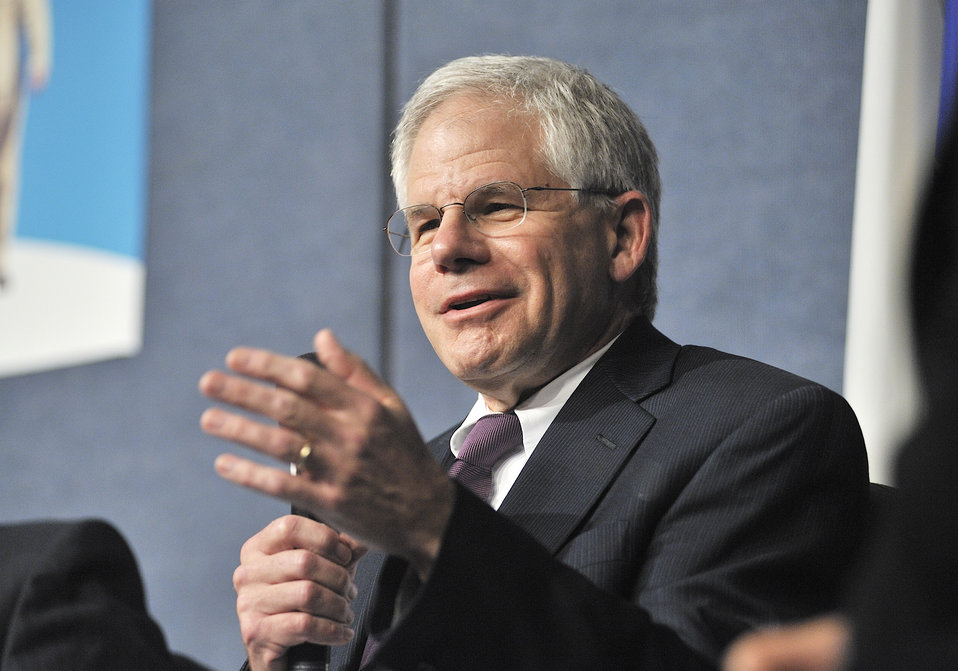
Jeffrey Salmon, Deputy Director for Resource Management, Office of Science, speaks on the panel.